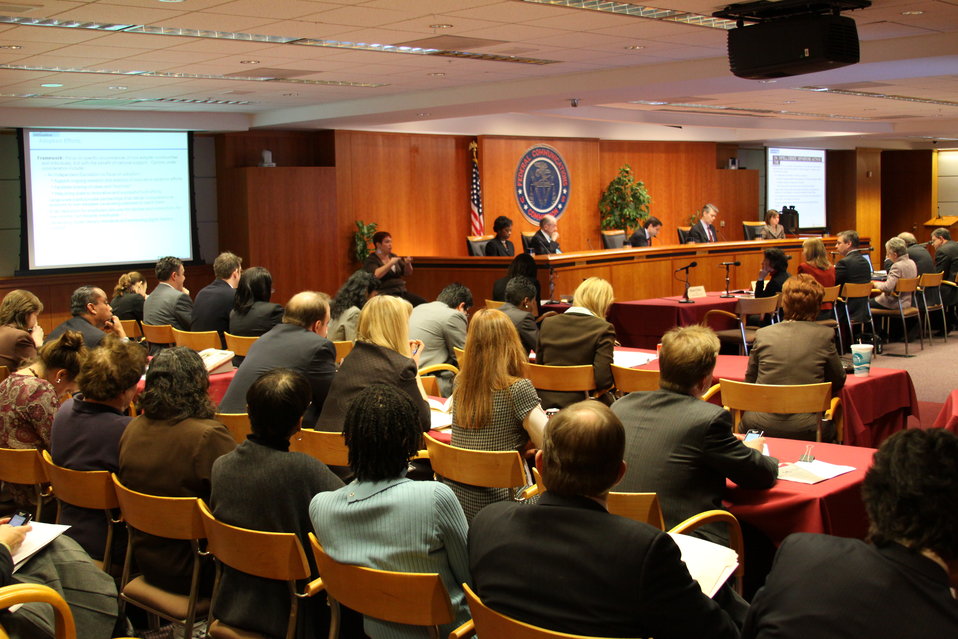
December Commission Meeting